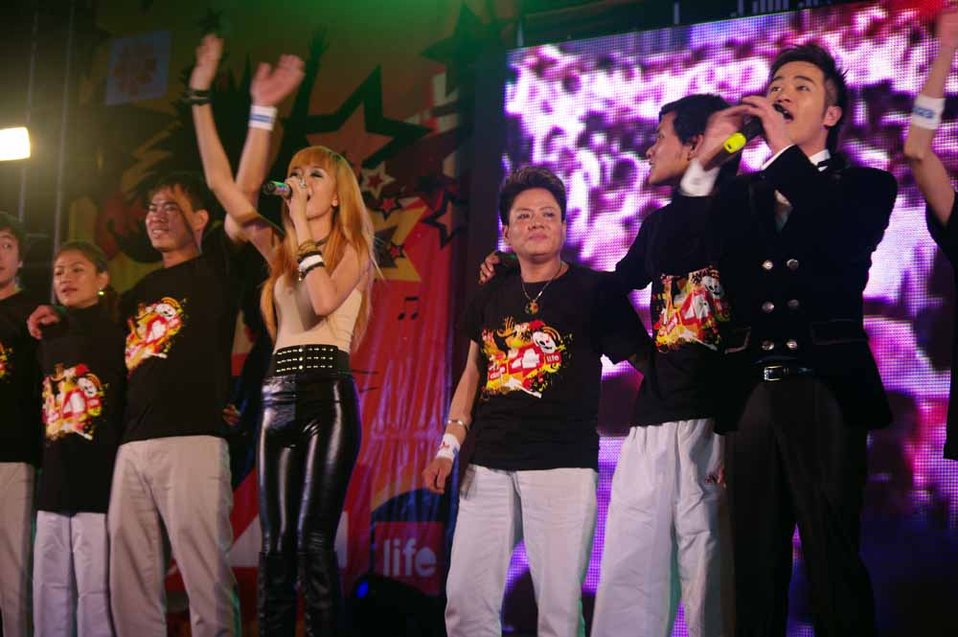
dance4life, Hanoi